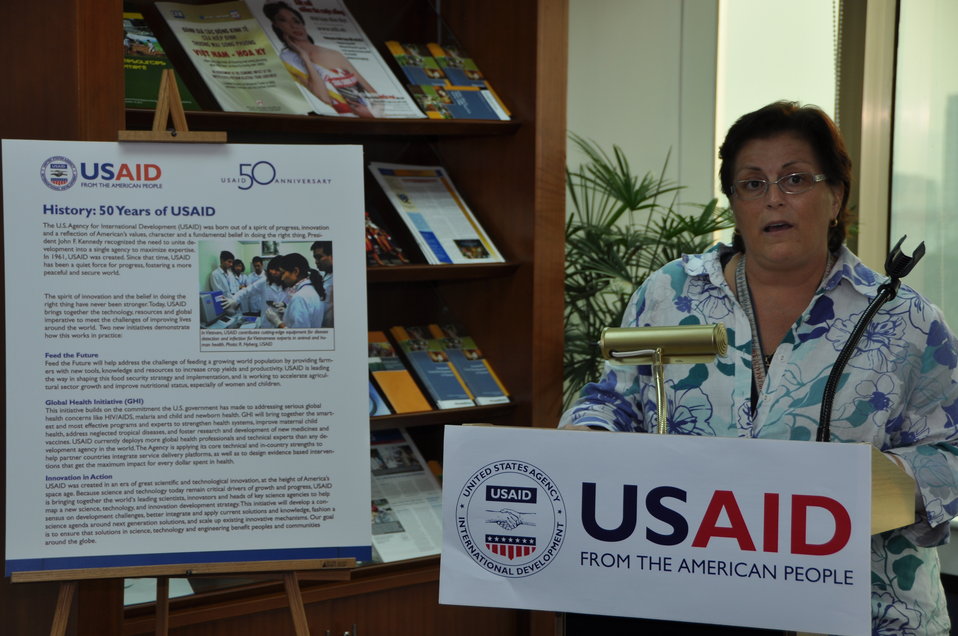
USAID Vietnam Open House, November 3, 2011

U.S. Embassy Deputy Chief of Mission, Claire Pierangelo.